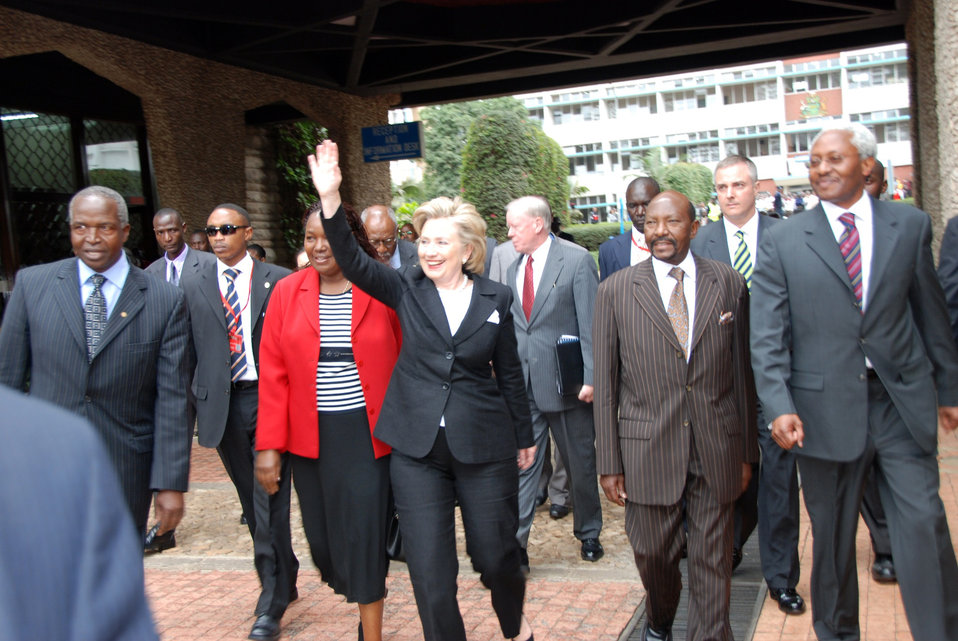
Secretary Clinton Visits Nairobi University

A cheering crowed greets U.S. Secretary of State Hillary Rodham Clinton after to a town hall meeting at the University of Nairobi in Nairobi, Kenya August 6, 2009.